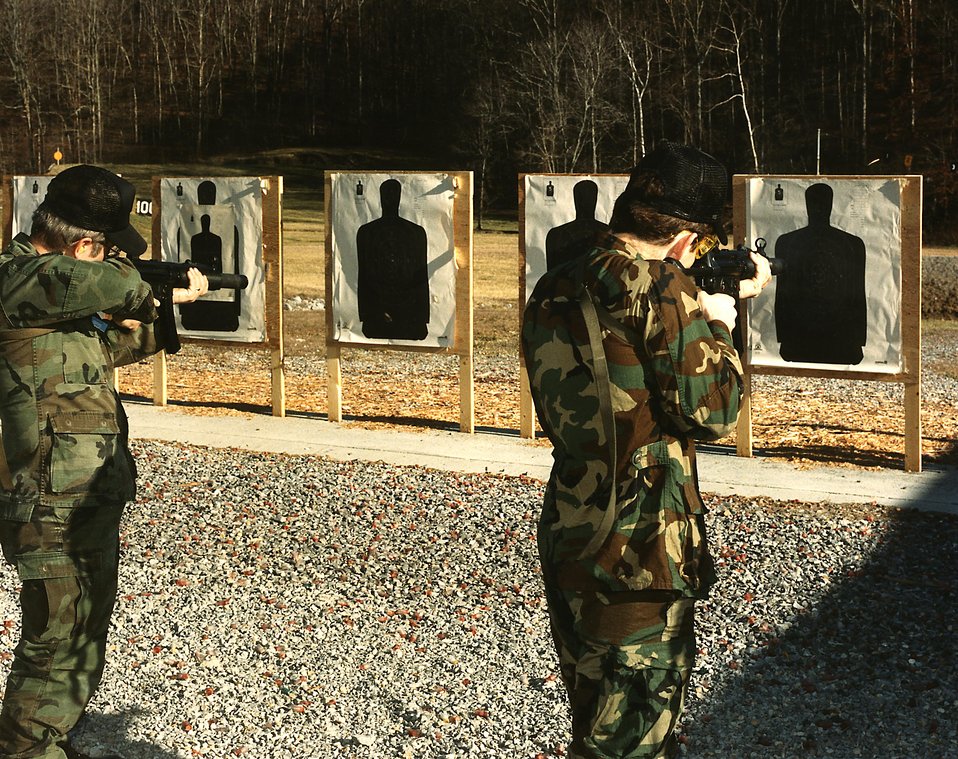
Rifle range.